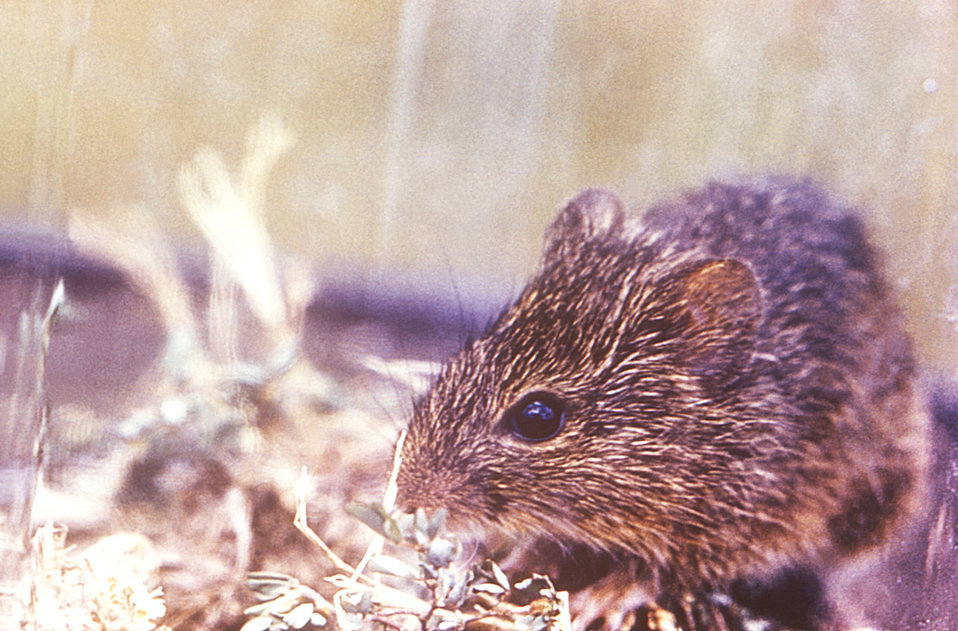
This image depicts a cotton rat, Sigmondon hispidus, which is a host to the dermatophytic fungus, Trichophyton mentagrophytes, which can infect both mammals, as well as humans.